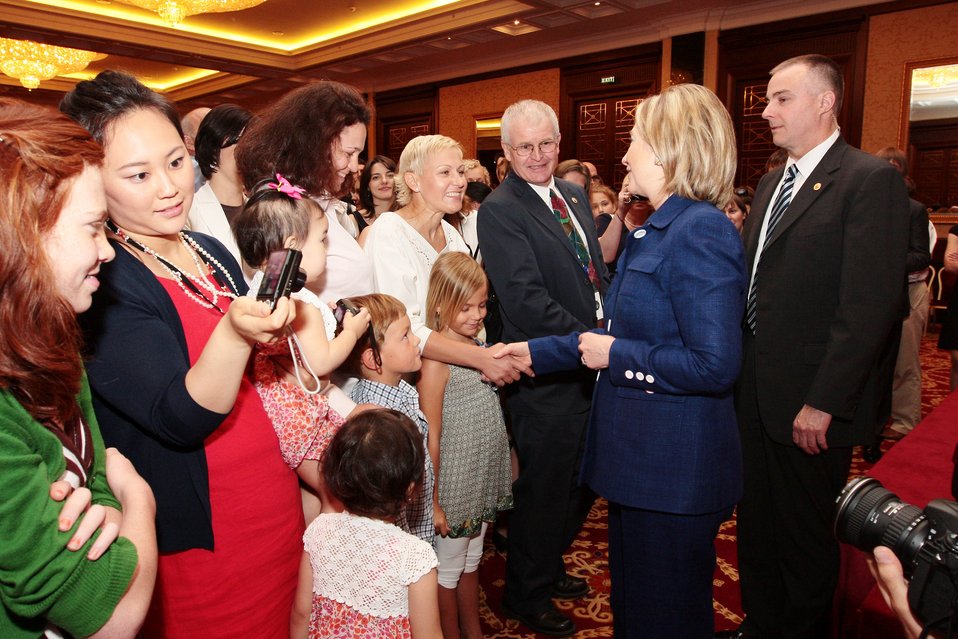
Secretary Clinton Addresses U.S. EmbassyStaff and Families in Ukraine

U.S. Secretary of State Hillary Rodham Clinton speaks with U.S. Embassy Kyiv staff and family members in Kyiv, Ukraine July 2, 2010.